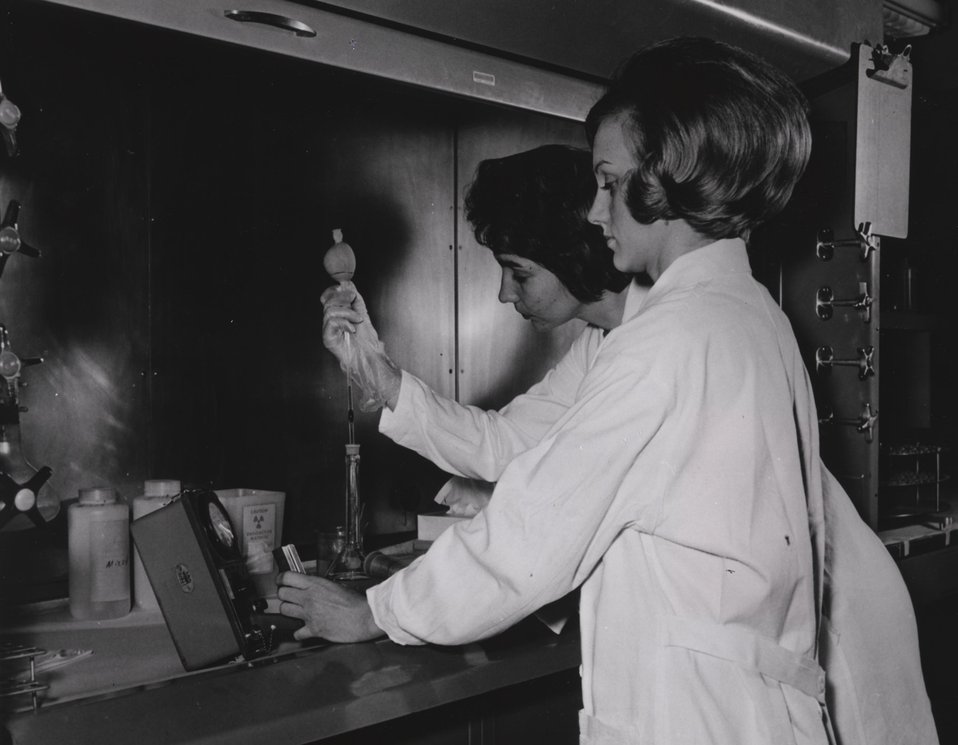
Participants in one of the nuclear medical technology courses presented regularly by the Special Training Division of Oak Ridge Associated Universities. c. 1970